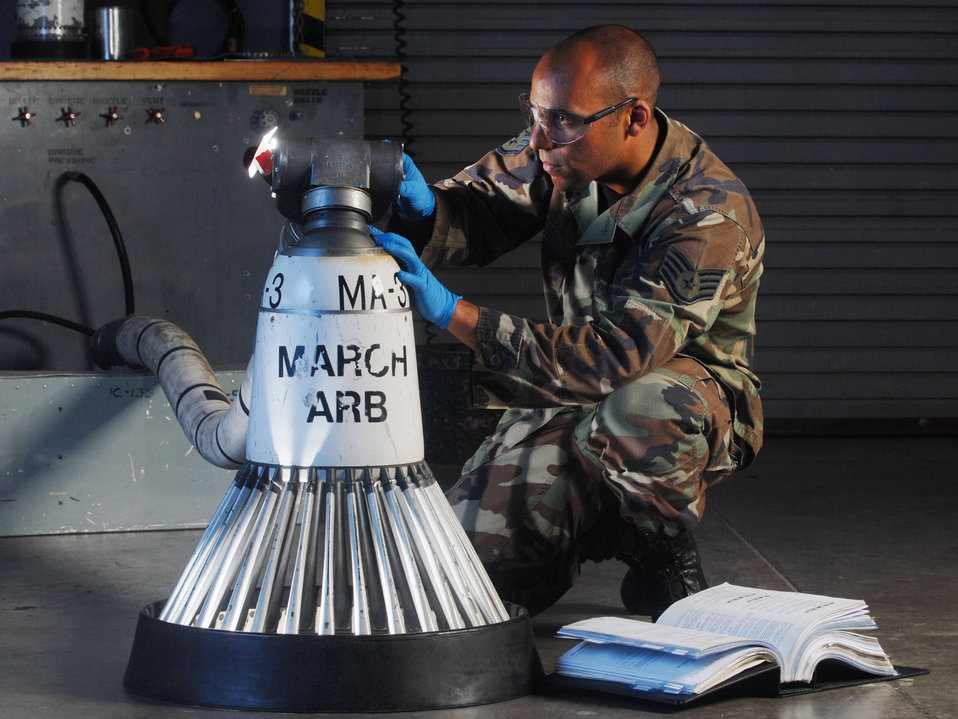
One more turn

Staff Sgt. Chris Wietecha conducts a pressurization test on a KC-135 Stratotanker aerial refueling drogue March 25 at March Air Reserve Base, Calif. Sergeant Wietecha is a member of the 452nd Maintenance Squadron.